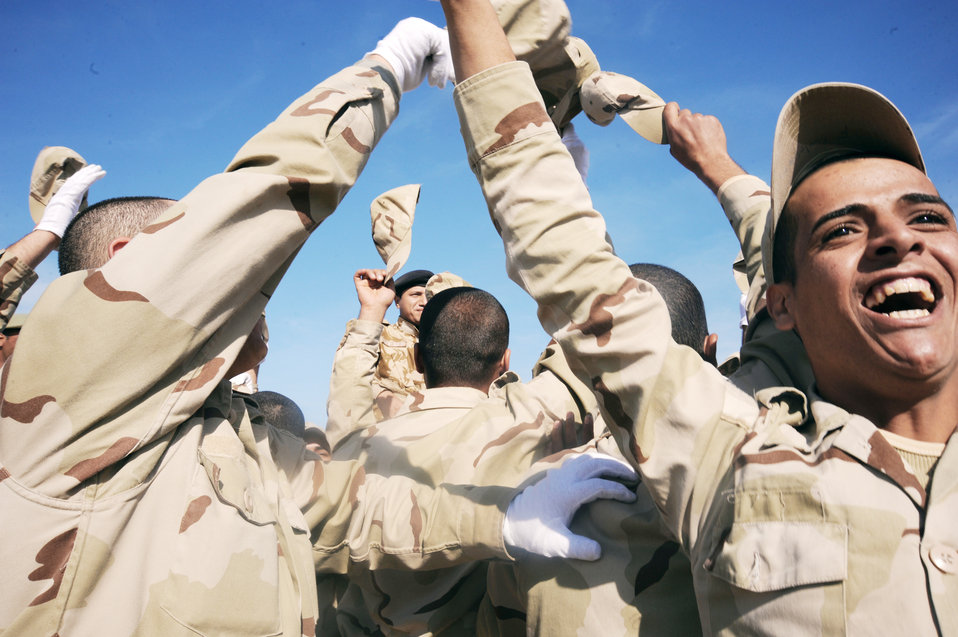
New recruits get a leg up

Iraqi air force recruits celebrate after their graduation from the basic military training Top Off course at the Iraqi Air Force Training School Dec. 28, 2009 at Camp Taji, Iraq. The Top Off course teaches recruits about rank structure, leadership and what kind of benefits they will receive.